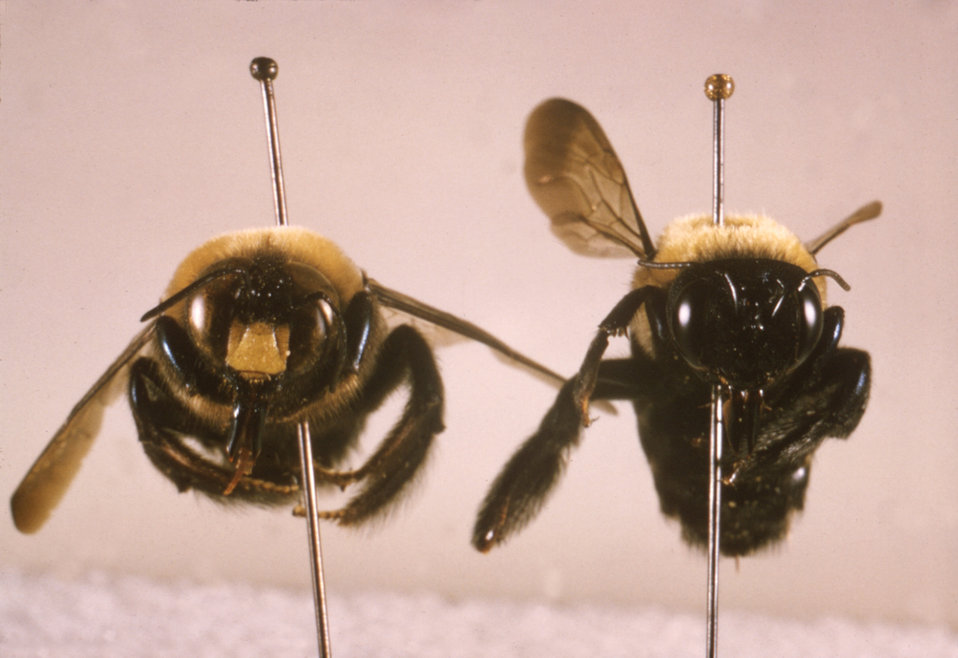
This image shows the faces of two adult carpenter bees, Xylocopa virginica.